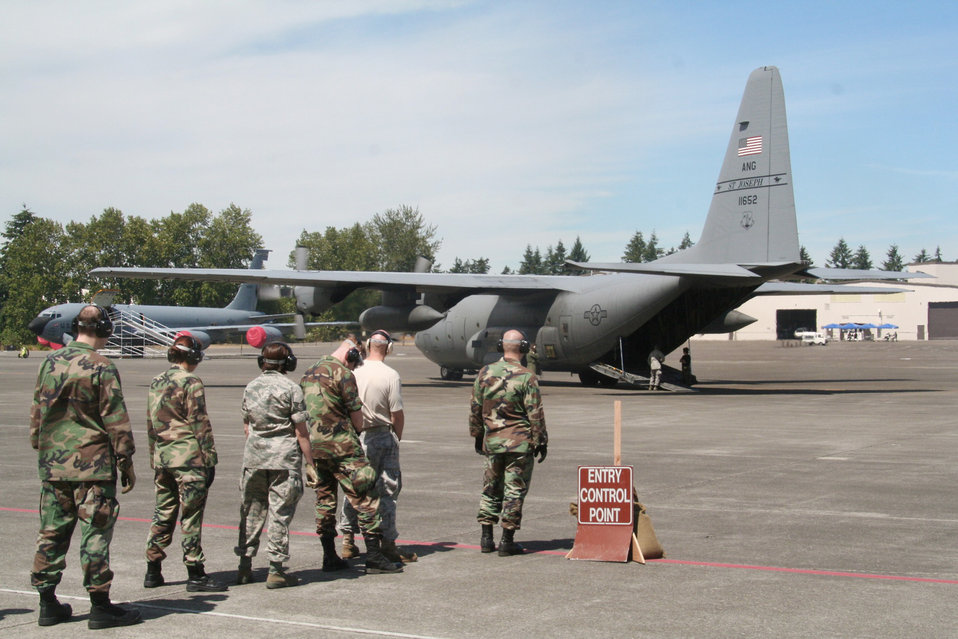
Guard members bring unique skills to war effort

Teams competing in the aeromedical evacuation events for Air Mobility Rodeo 2009 wait in line as the competition commences July 20 at McChord Air Force Base, Wash. More than 100 teams are participating in Rodeo competition, including teams from seven foreign countries. Rodeo is the Air Force's and AMC's premier air mobility competition. It's an international combat skills and flying operations competition designed to develop and improve techniques, procedures and interoperability with international partners to optimize mobility partnerships and enhance mobility operations.